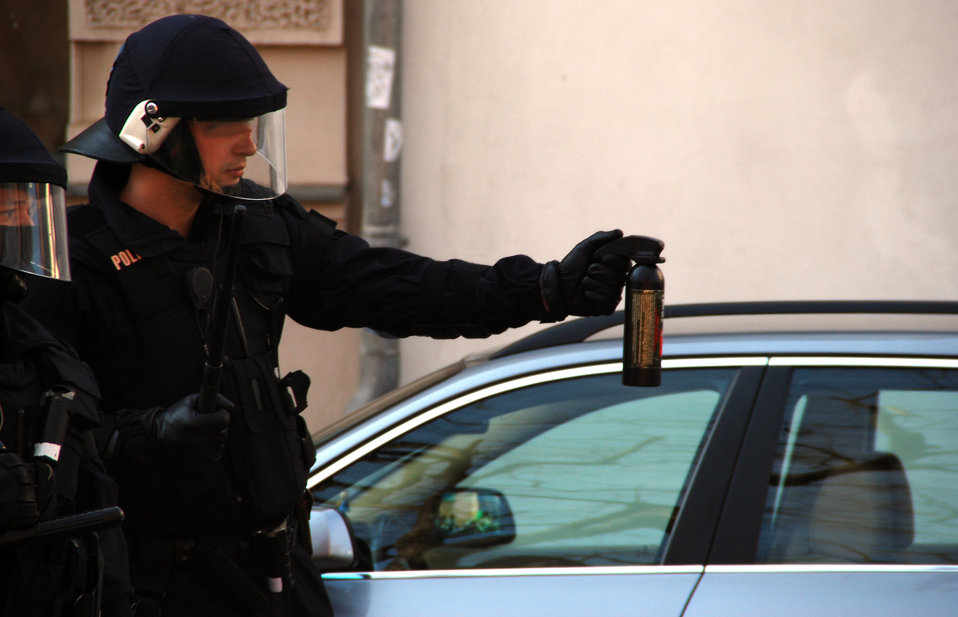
Deutsch: Proteste gegen den Nazi-Aufmarsch am 24.3.2012 in Frankfurt (Oder). Polizist mit Reizstoffsprühgerät RSG-8